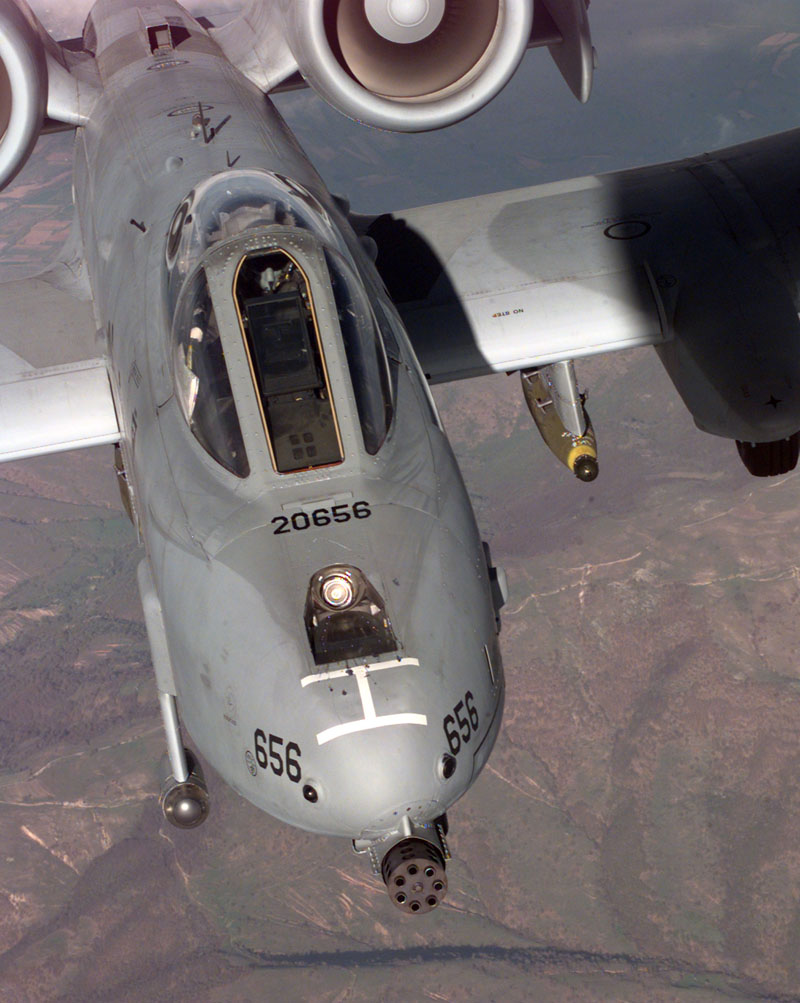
Warthog

1990's -- An A-10 Thunderbolt II, from the 52nd Fighter Wing, 81st Fighter Squadron, Spangdahlem Air Base, Germany, in flight during a NATO Operation Allied Force combat mission. The